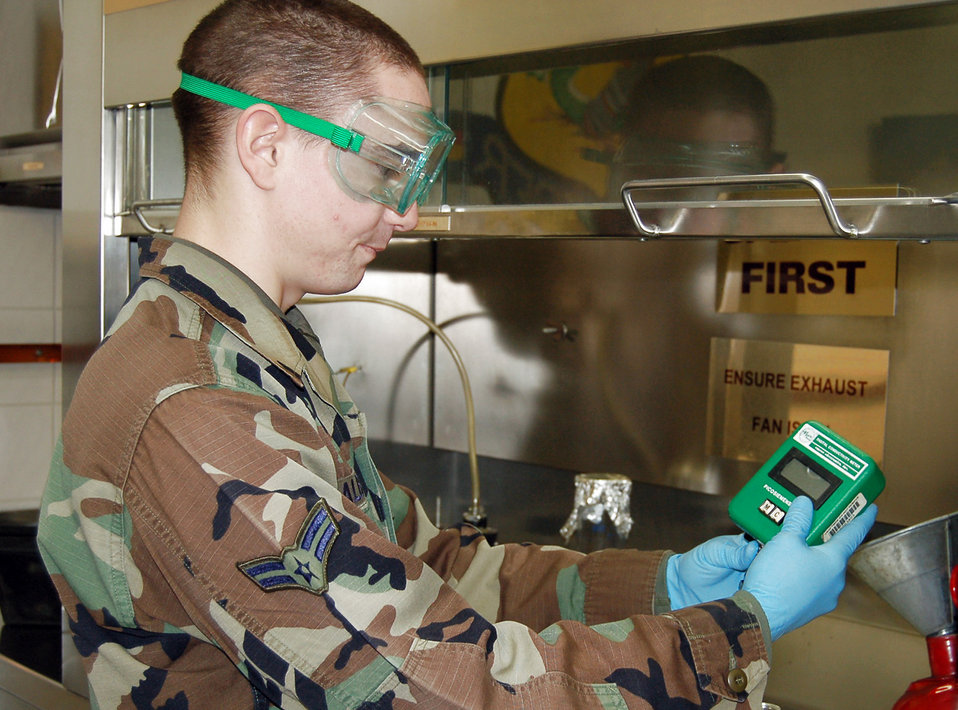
Fuel: No flying without the good stuff

Airman 1st Class Darren Albrecht checks the conductivity additive level in a fuel sample at Spangdahlem Air Base, Germany. The additive decreases the conductivity of the fuel making it safer to handle. Airman Albrecht is a 52nd Logistics Readiness Squadron fuel laboratory technician.